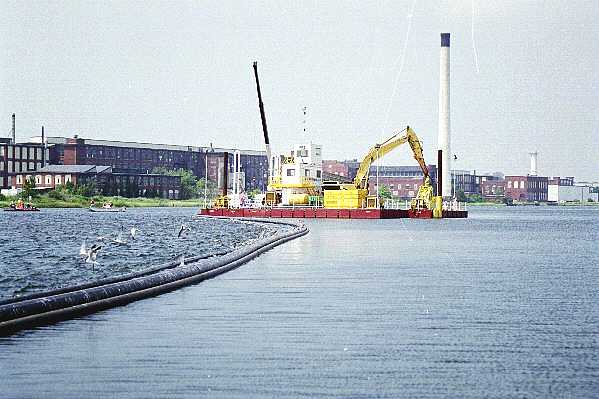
Summer 2000, EPA tests dredging technology

While testing the accuracy and performance of the dredging equipment, EPA collected environmental monitoring data to better understand any potential impacts for future cleanup work in the harbor.